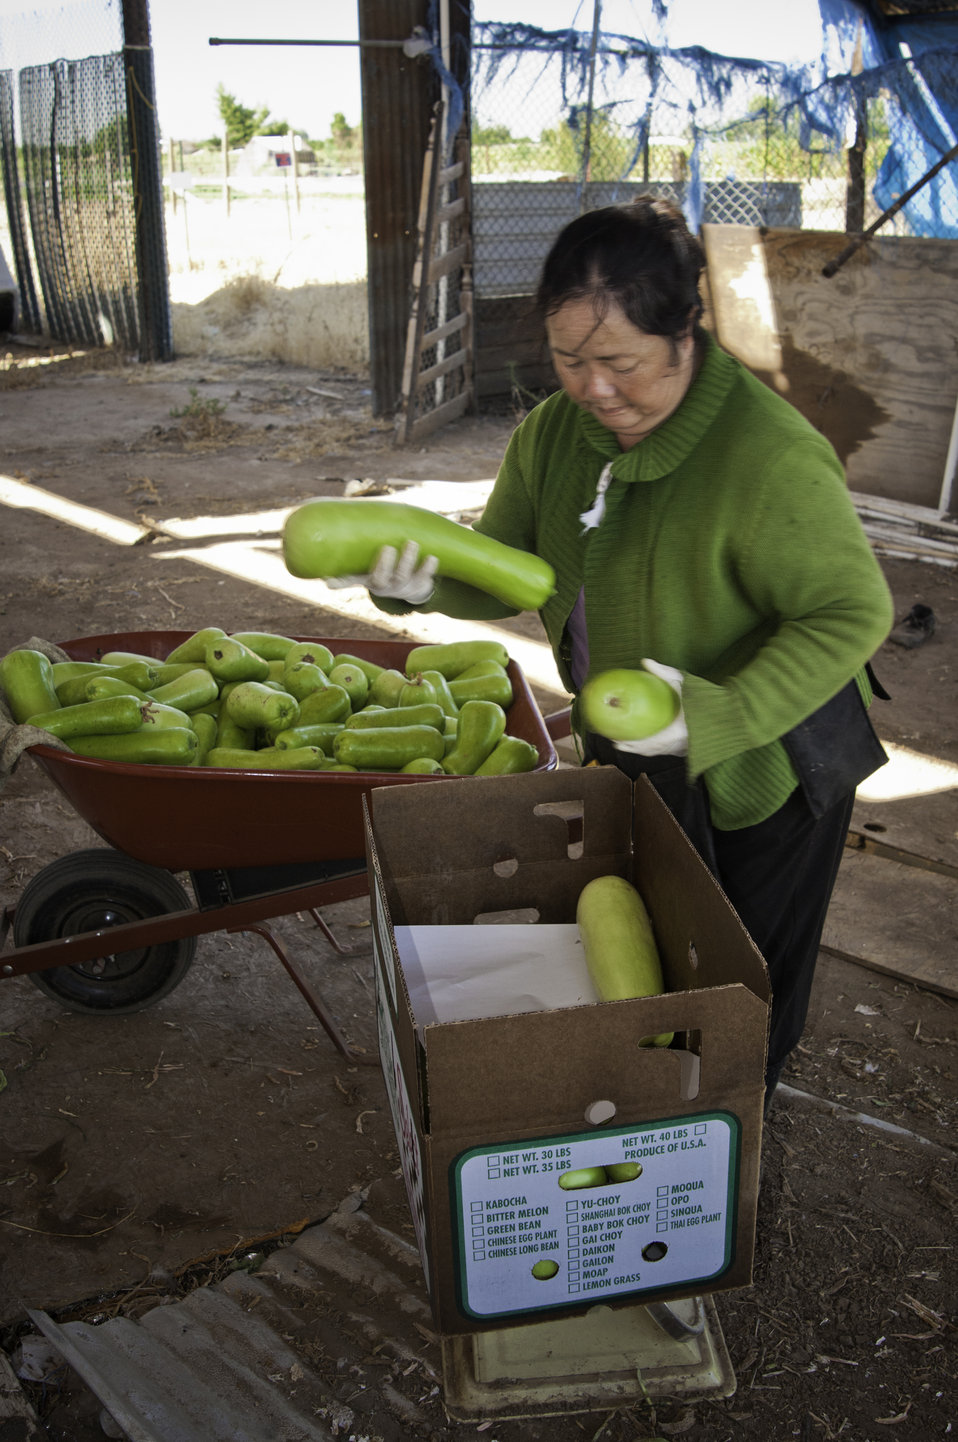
Packing Opo Squash in Pager, California for the sale farmers market on Thursday, August 29, 2013.